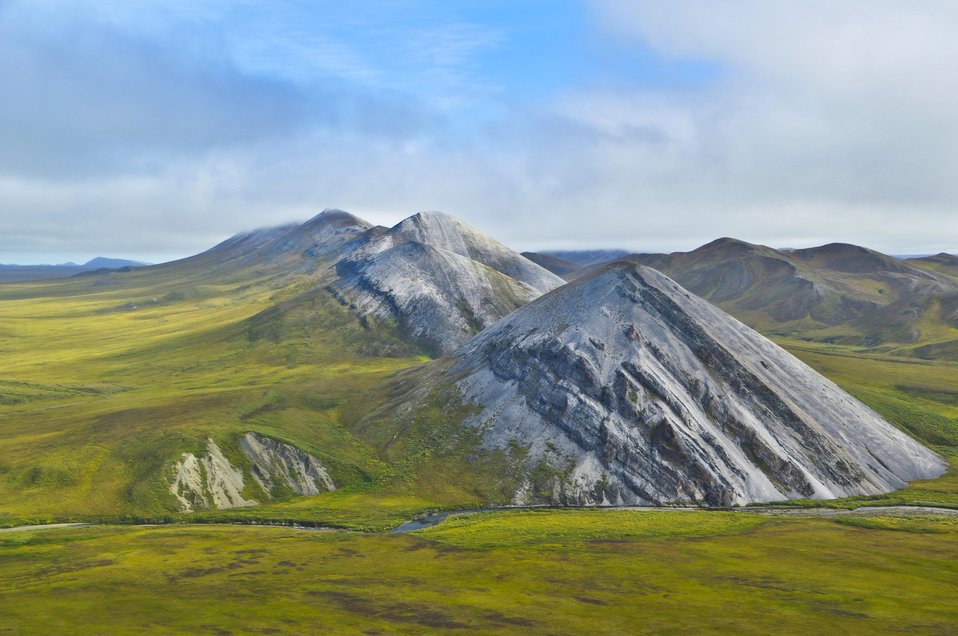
Lawrence Berkeley National Laboratory scientists are among a team developing new ways to study the changing arctic ecosystem.

The Next-Generation Ecosystem Experiments (NGEE) will study the response to physical, ecological, and biogeochemical processes to atmosphere and climate change from the molecular to the landscape scale.